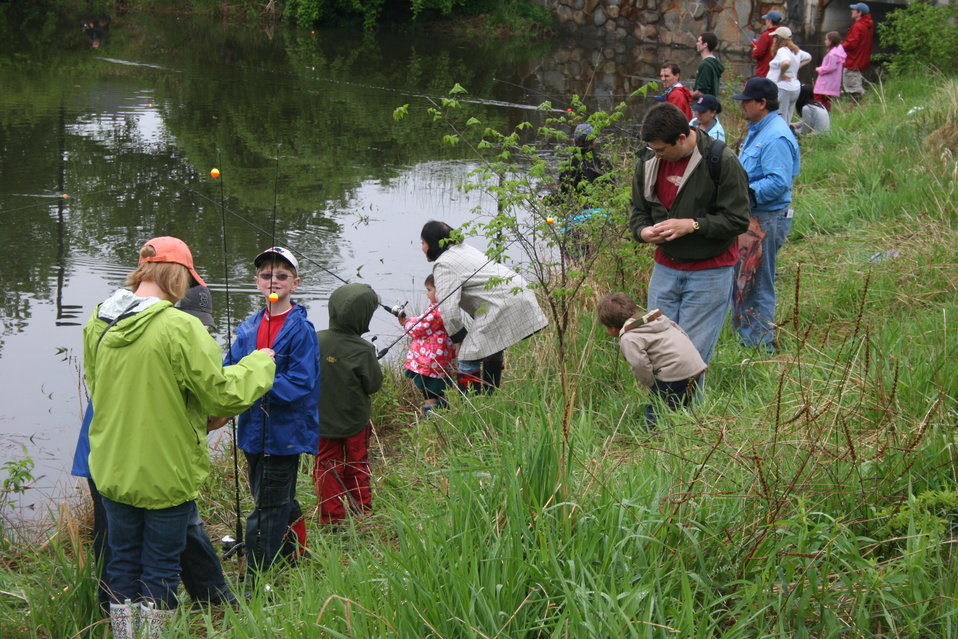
Fishing event at U.S. Fish and Wildlife Service Regional Office in Hadley, MA